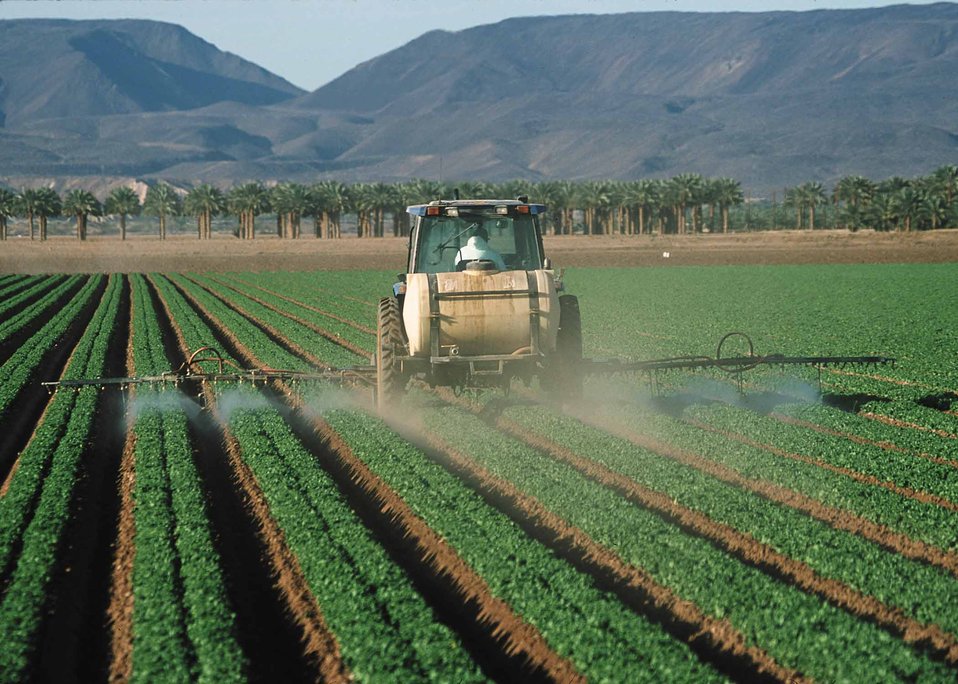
Spraying pesticides on lettuce

Pesticide application on leaf lettuce in Yuma, Az.